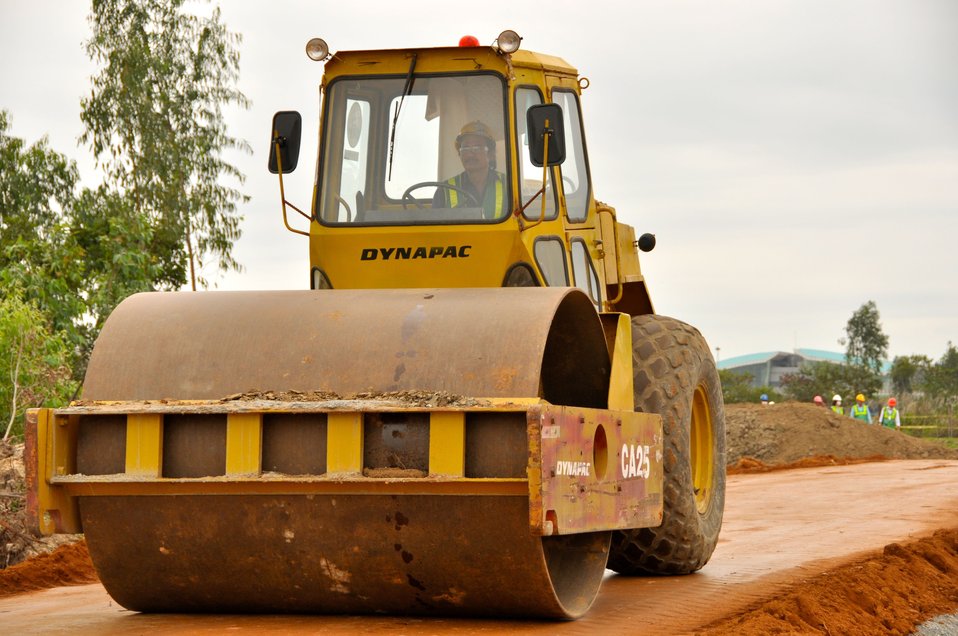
Site Preparation for Environmental Remediation of Dioxin Contamination at Danang Airport

Danang Airport, January 22, 2013